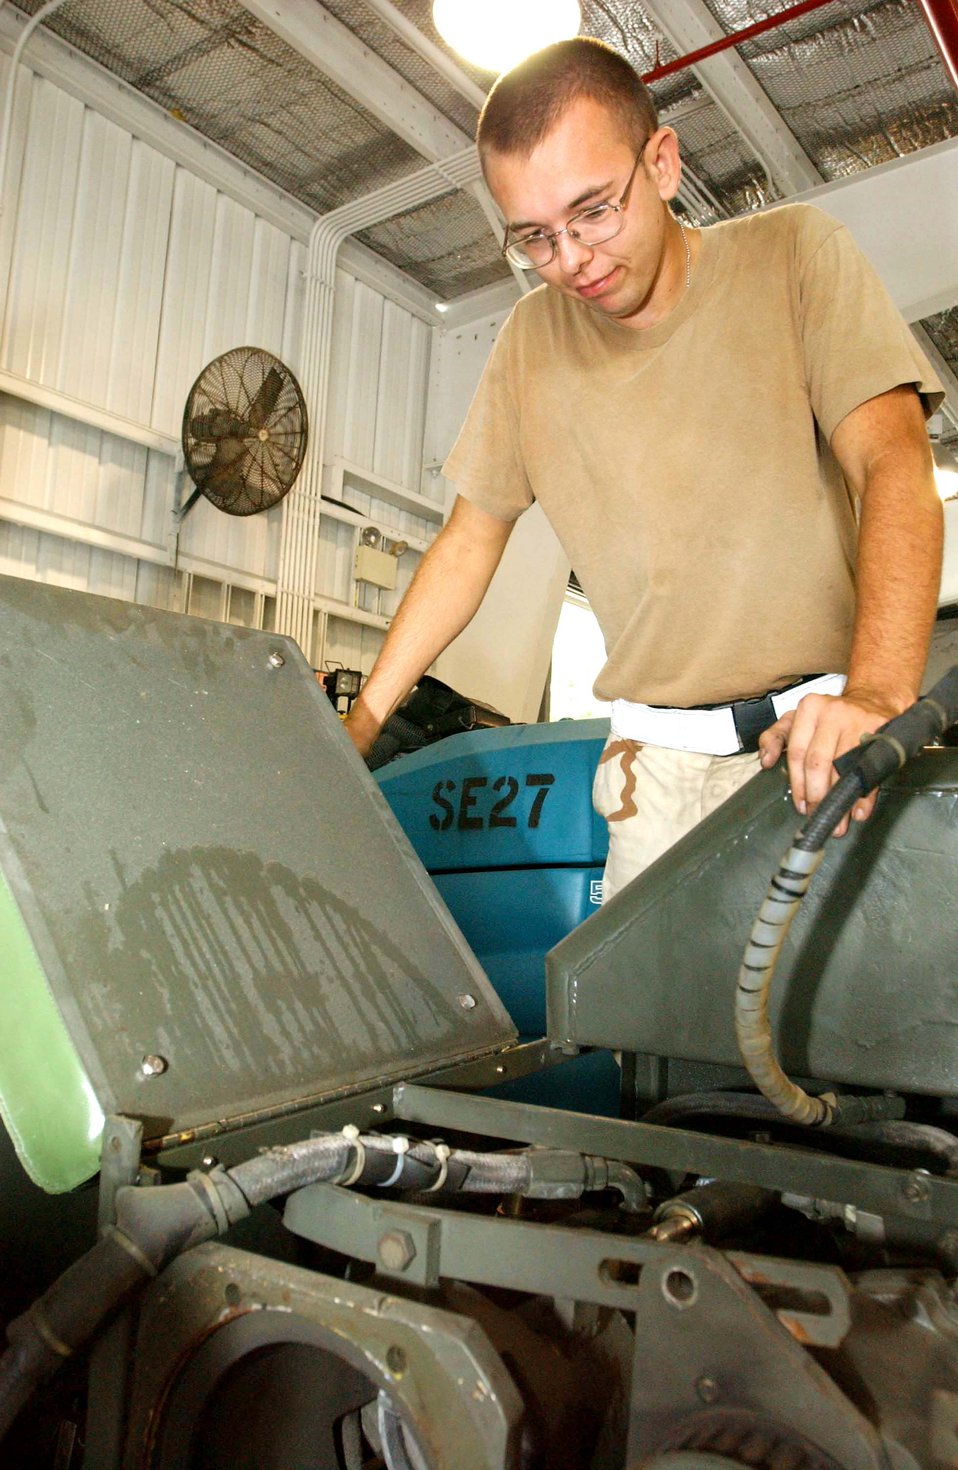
Airmen keep ground equipment working, mission flying

OPERATION ENDURING FREEDOM -- Airman 1st Class Jerred Goodroad inspects a bomb-lift vehicle scheduled for an engine swap at a forward-deployed location. He is an aerospace ground equipment mechanic with the 40th Expeditionary Maintenance Squadron deployed from Minot Air Force Base, N.D.